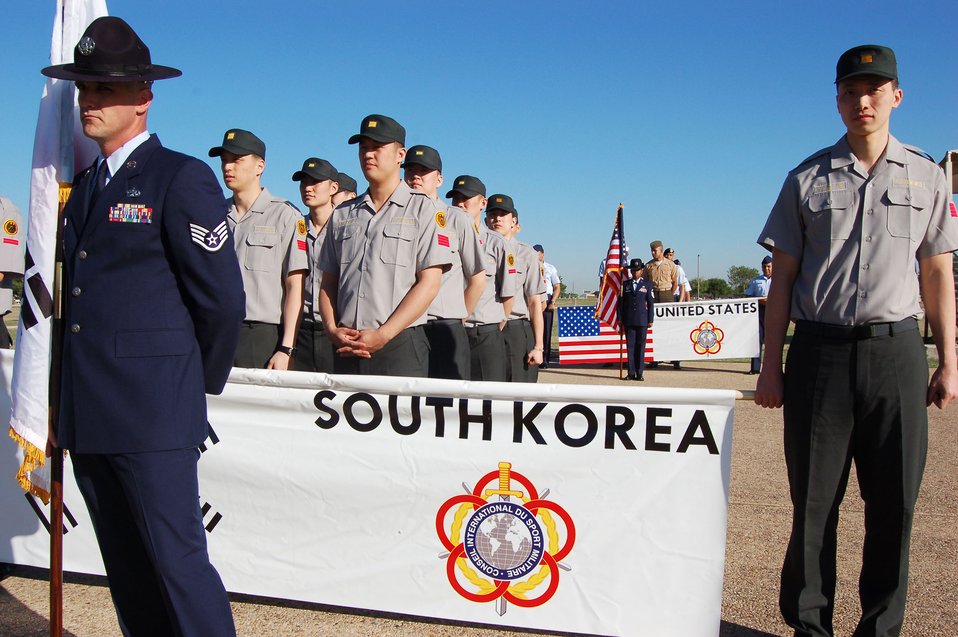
International basketball tournament kicks off at Lackaland

A team of South Korean basketball players stands in formation before the opening ceremony of the 2008 International Military Sports Council Basketball Tournament April 14 at Lackland Air Force Base, Texas. The tournament features teams from the United States, Greece, Italy, South Korea, Canada, Latvia and Lithuania.